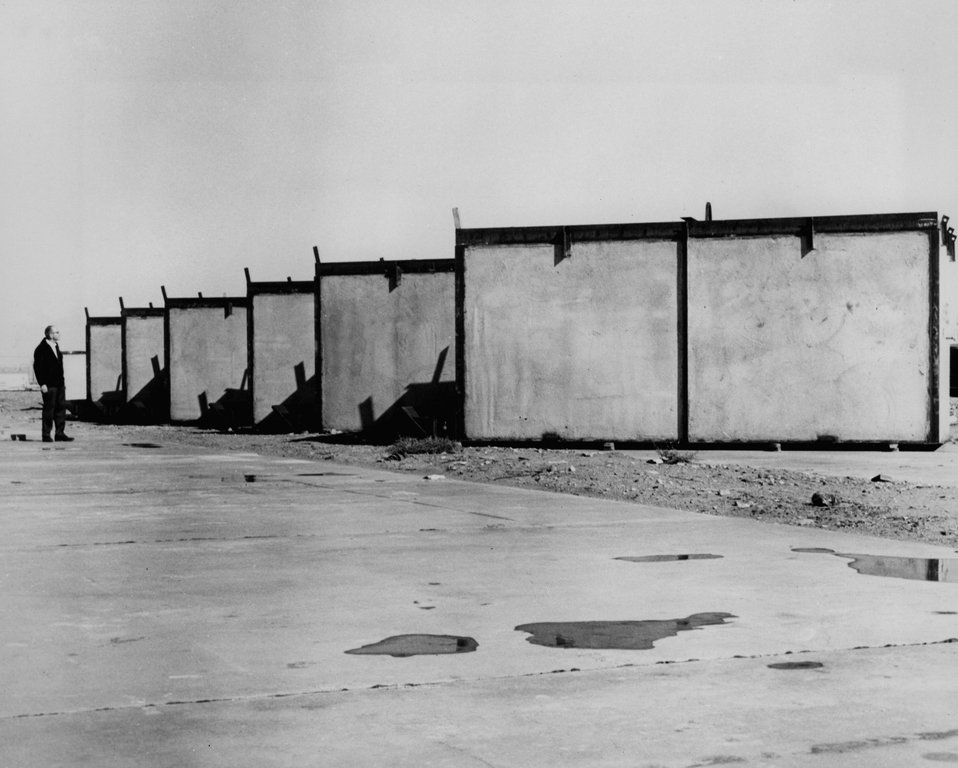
Concrete burial boxes weighing up to 30 tons are used to bury highly radioactive process equipment which cannot be decontaminated to low level at the Energy Research and Development Administration's Hanford Works.